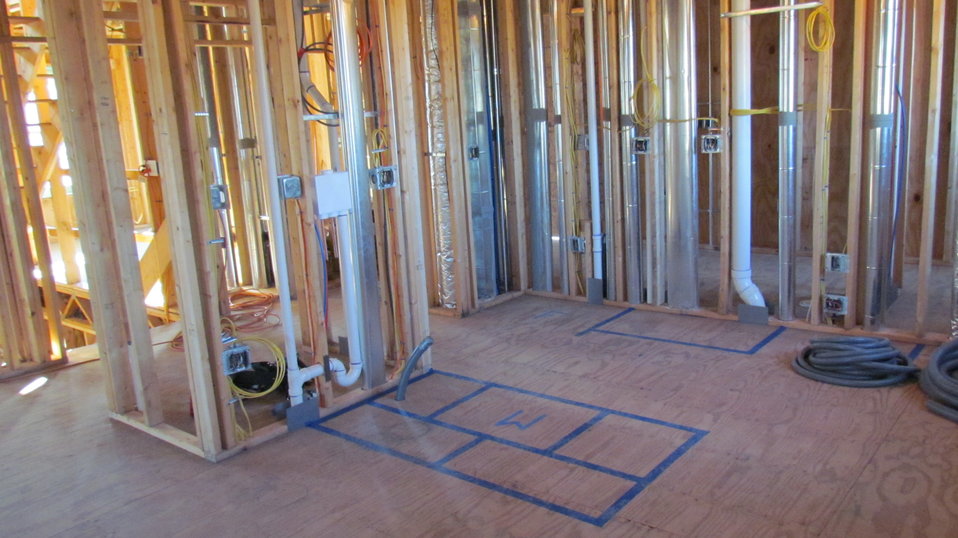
Kitchen area of NZERTF. Blue tape is used to designate future placement of appliances/cabinets.